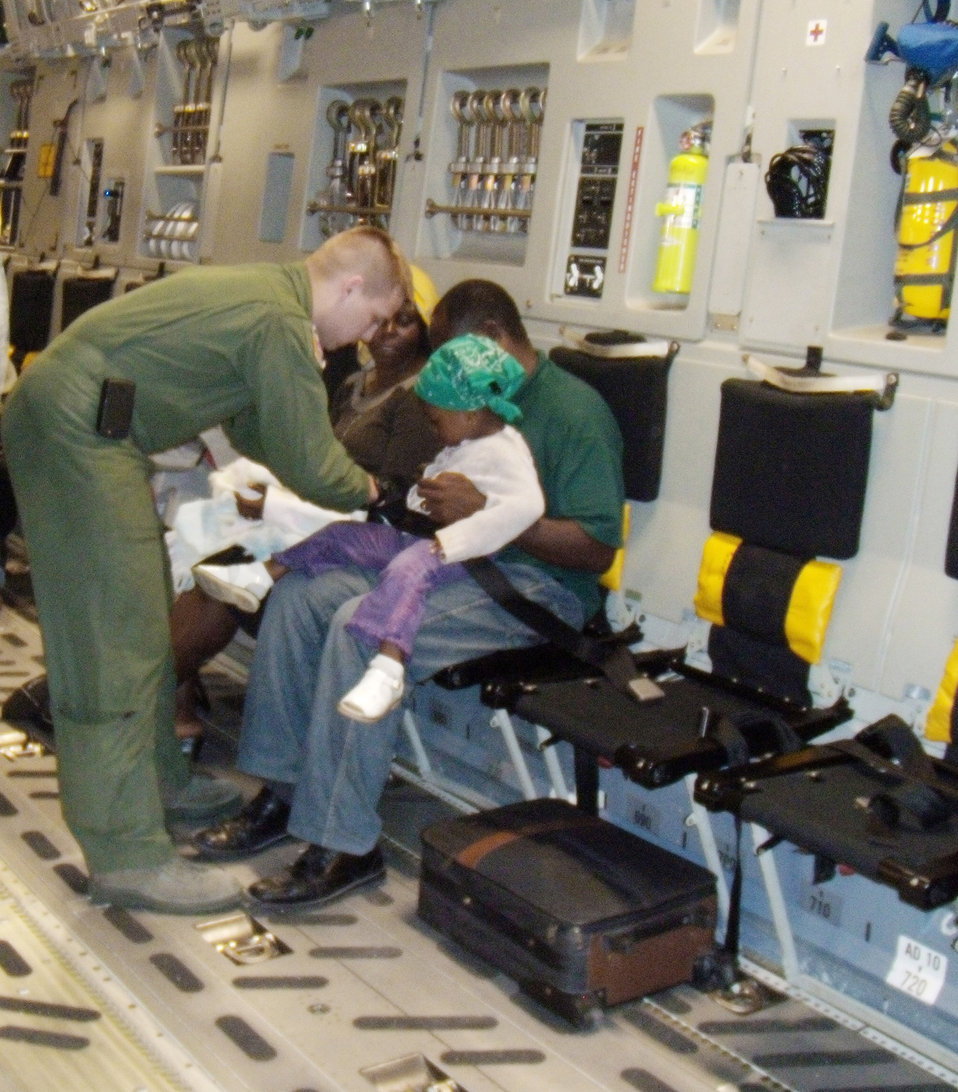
Operation Unified Response

Airman 1st Class Landon Greenwood helps buckle in a young girl being evacuated on a C-17 Globemaster III to the U.S. Jan. 19, 2010, from Port-au-Prince, Haiti. The C-17 aircrew had delivered 90,000 pounds of cargo and was boarding 36 evacuees in support of Operation Unified Response. Airman Greenwood is a loadmaster with the 3rd Airlift Squadron at Dover Air Force Base, Del.